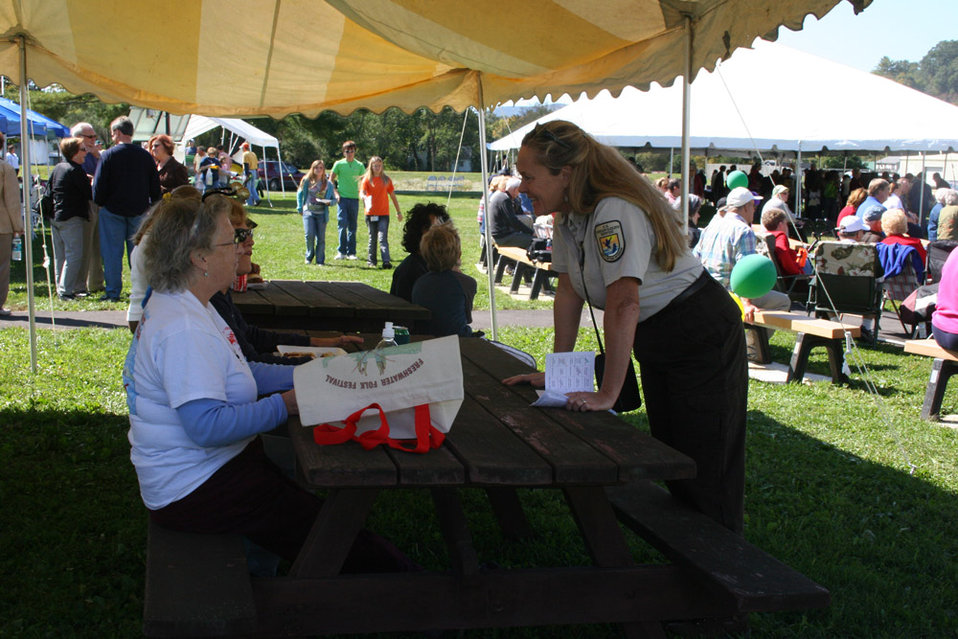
Freshwater Folk Festival

The 5th Annual Freshwater Folk Festival at White Sulphur Springs National Fish Hatchery in West Virginia.Credit: USFWS